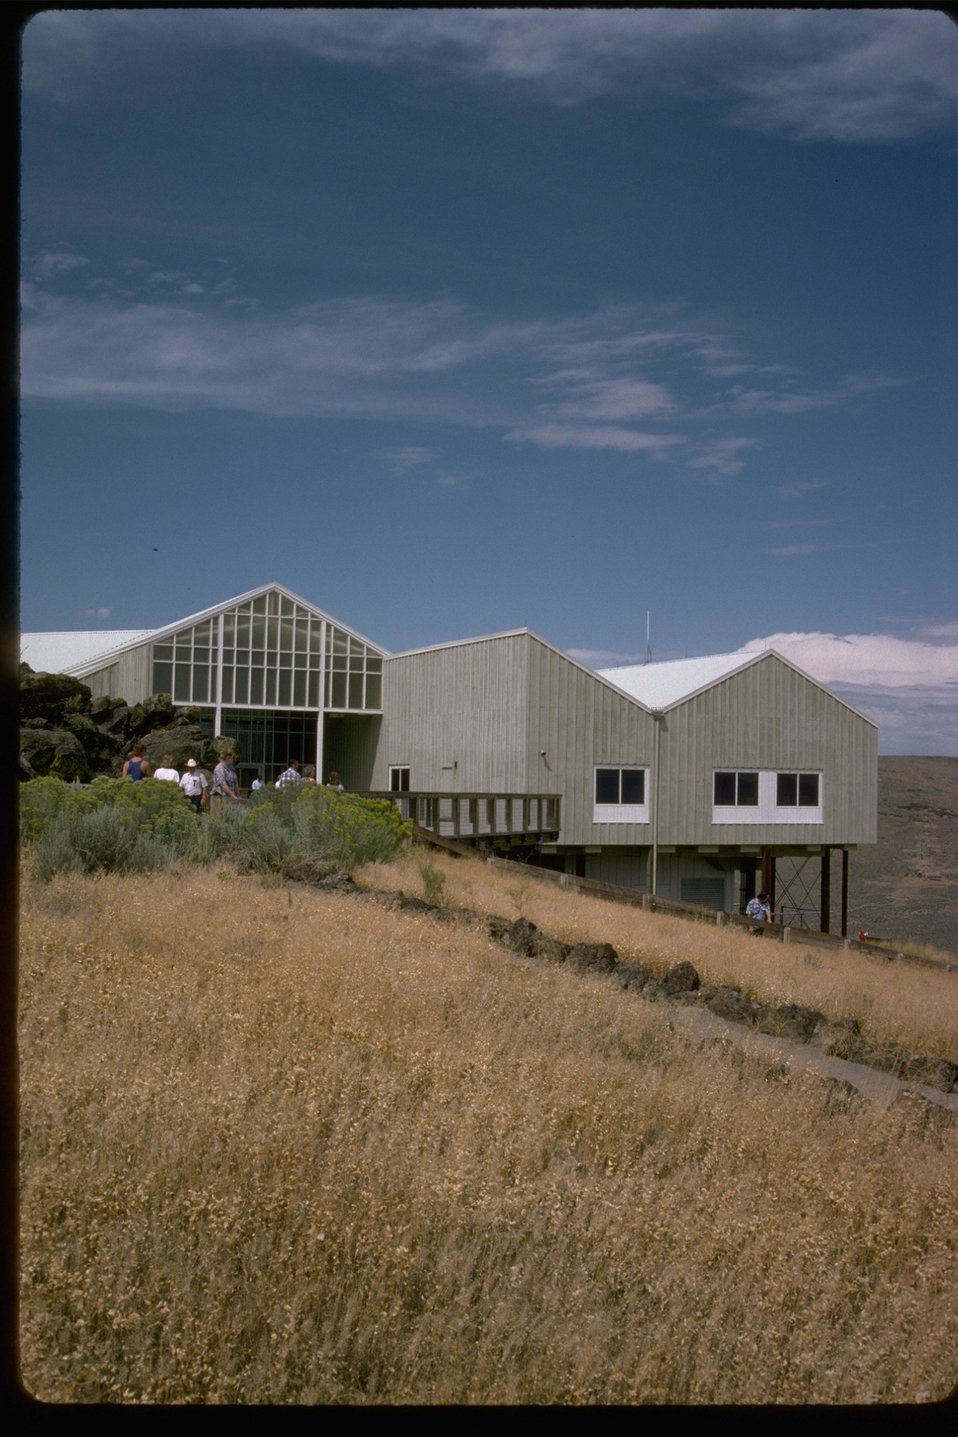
Exterior view of the NHOTIC.